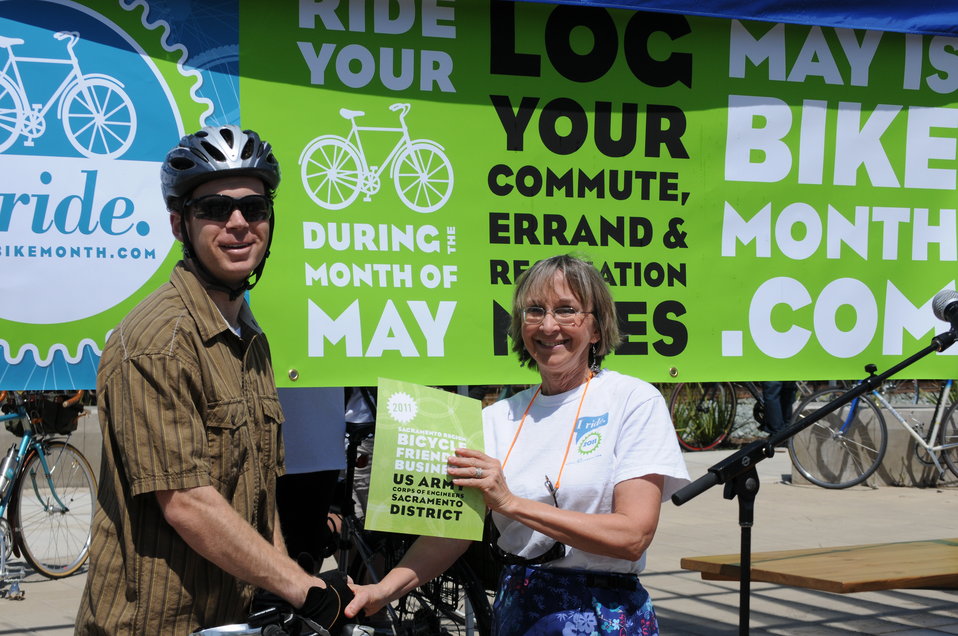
Sacramento District - 2011 bike friendly workplace

SACRAMENTO, Calif. -- U.S. Army Corps of Engineers Sacramento District regulatory project manager Zach Simmons accepts an award on behalf of the district from Sacramento Transportation Management Association coordinator Marilyn Bryant during a May is Bike Month kickoff event here May 2. The award recognized the Sacramento District as a 2011 bike-friendly workplace.

“To lure commuters out of their cars we have to convince them that bicycle commuting is not just for the bold and the brave, it is a relatively safe form of transportation,” said Bryant, organizer of the Sacramento May is Bike Month campaign, which promotes the use of bicycle transportation with special events and promotions throughout the month of May.